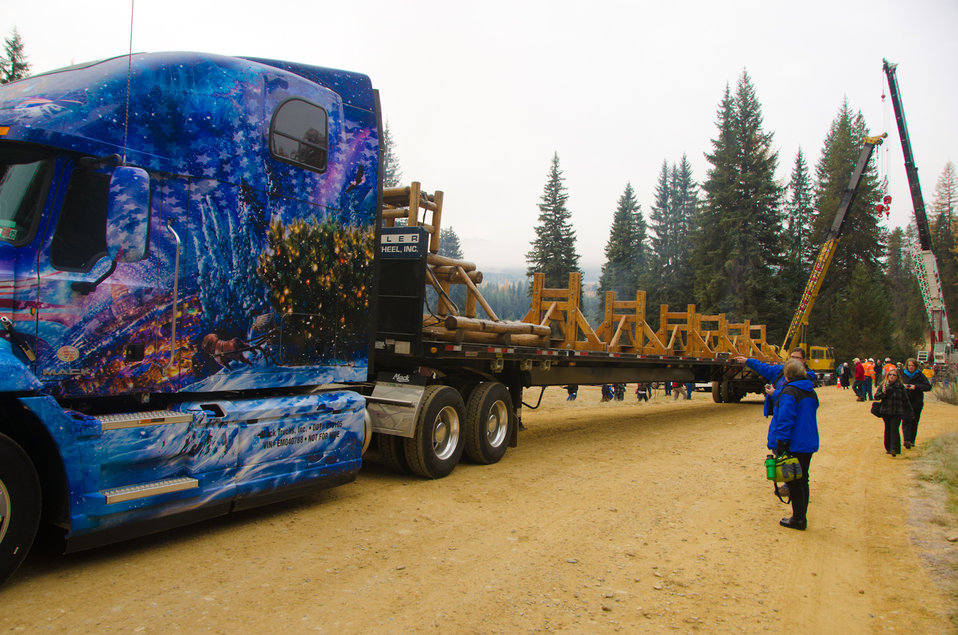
A specially built tractor-trailer transports the official 2013 Capitol Christmas Tree from the Colville National Forest in Washington. The Capitol Christmas tree is an 88-foot tall Engelmann spruce that was harvested on Nov. 1, 2013.